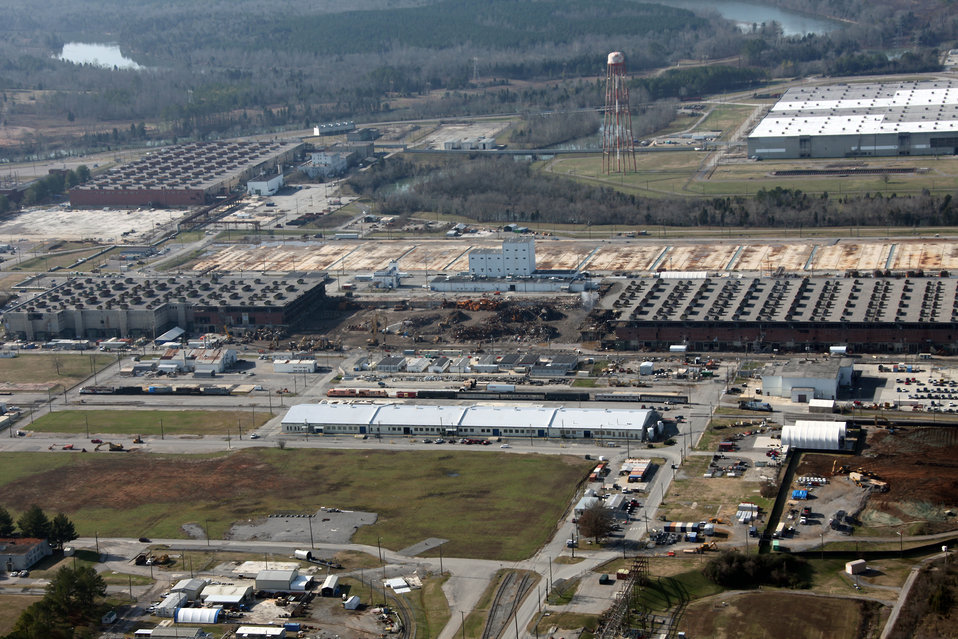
Oak Ridge Finds Ways to Remove K-25 Faster, Cheaper

K-25, once the world’s largest building under one roof, reflects less of its former title every day. Due to the partnership between the U.S Department of Energy (DOE) Office of Environmental Management (EM) cleanup team and Oak Ridge’s prime environmental management contractor, URS | CH2M Oak Ridge, LLC (UCOR), the 44-acre, multi-level uranium-enrichment superstructure is in the advanced stages of demolition.